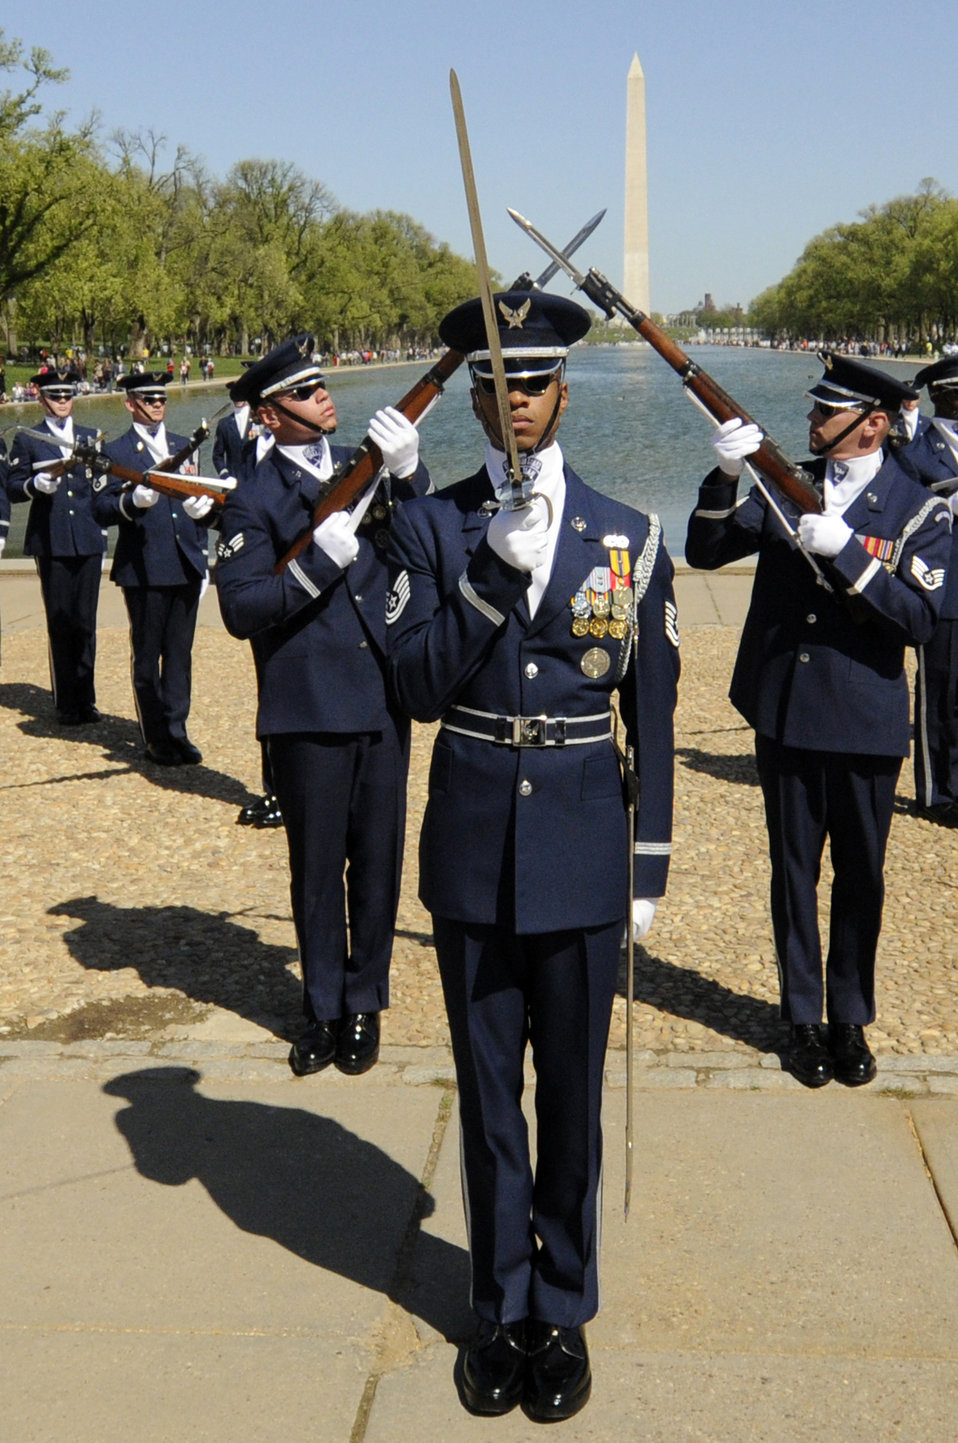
Joint service drill competition held at Lincoln Memorial

Members of the U.S. Air Force Honor Guard Drill Team perform during the 3rd Annual Joint Service Drill Team Exhibition April 10, 2010, at the Lincoln Memorial in Washington, D.C. The event featured drill team performances from all five military branches.